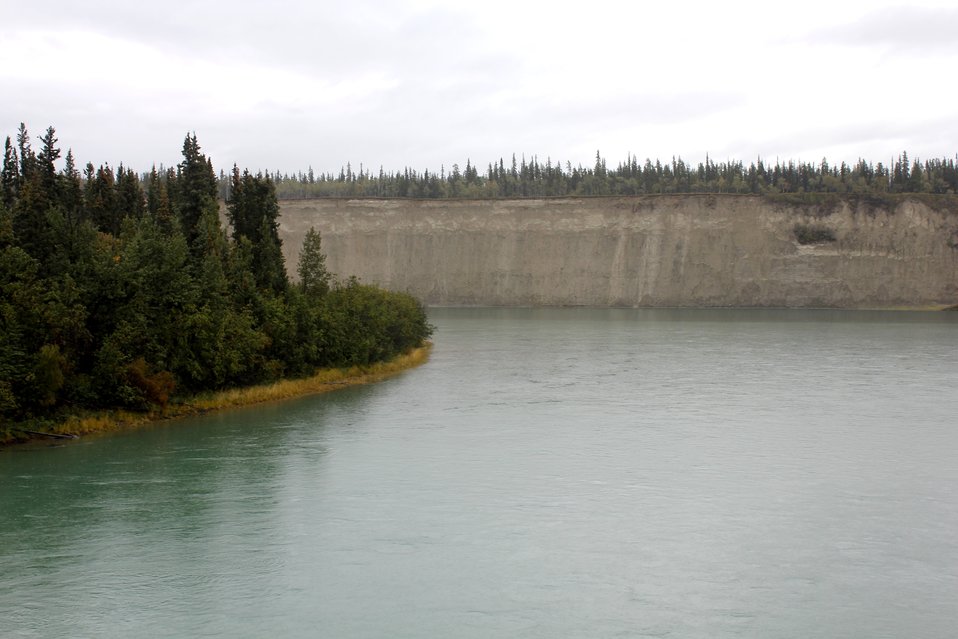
Near the junction of the MacKenzie and Red River of the North.